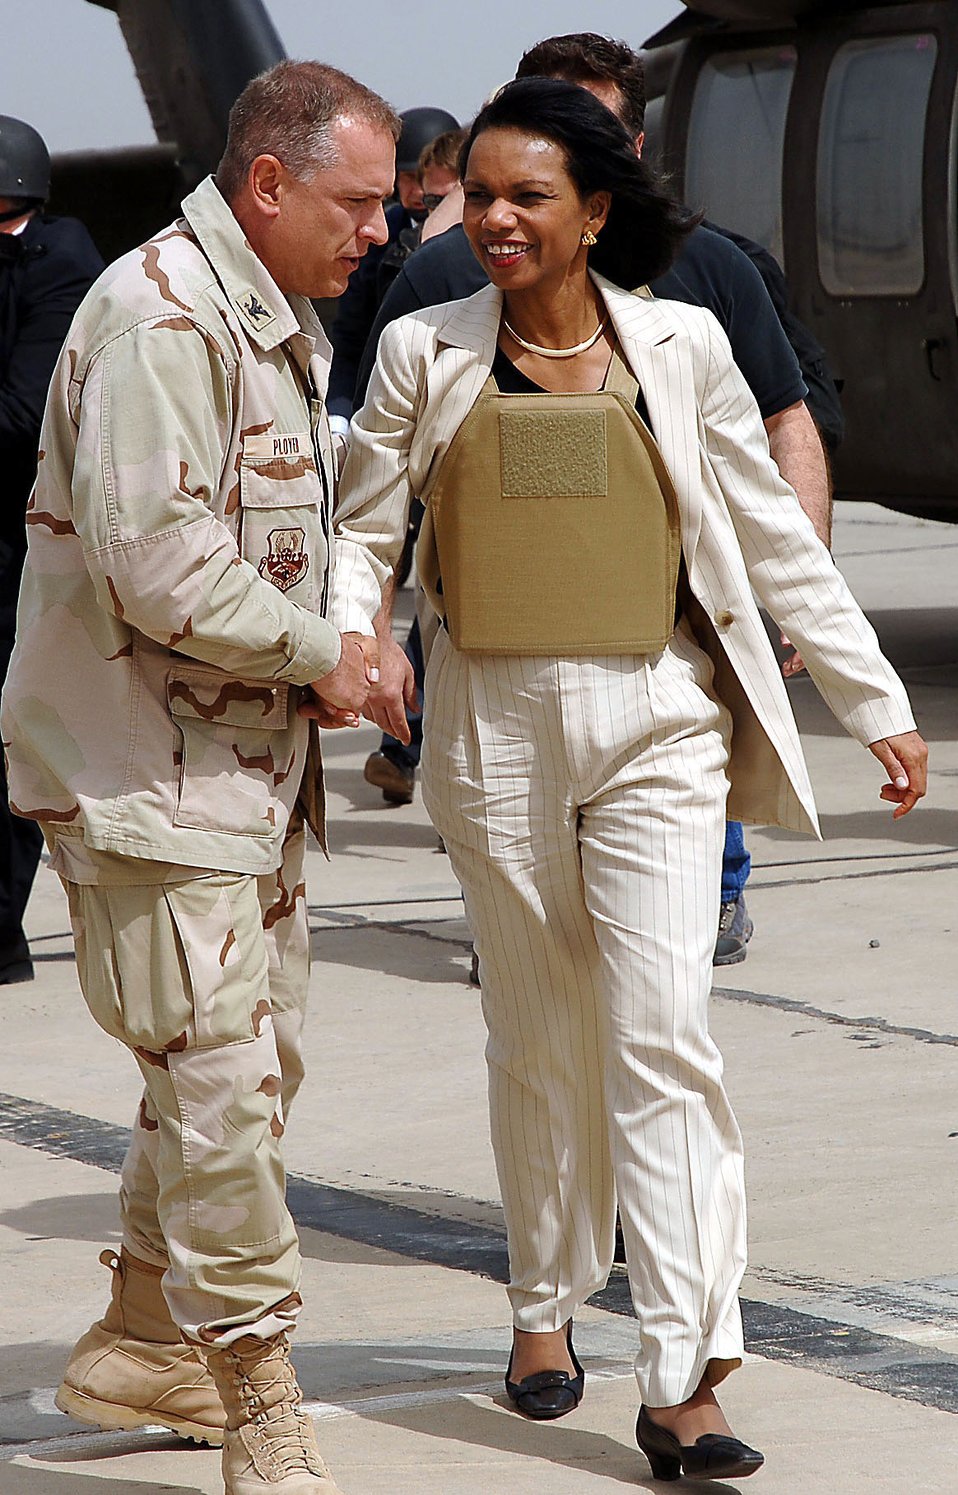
Secretary of state visits Iraq

Col. Dennis Ployer greets Condoleezza Rice, U.S. secretary of state, at Sather Air Base, Iraq, on Monday, April 3, 2006. Secretary Rice and Jack Straw, United Kingdom foreign secretary, met with Iraqi officials in Baghdad. Colonel Ployer is the 447th Air Expeditionary Group commander.